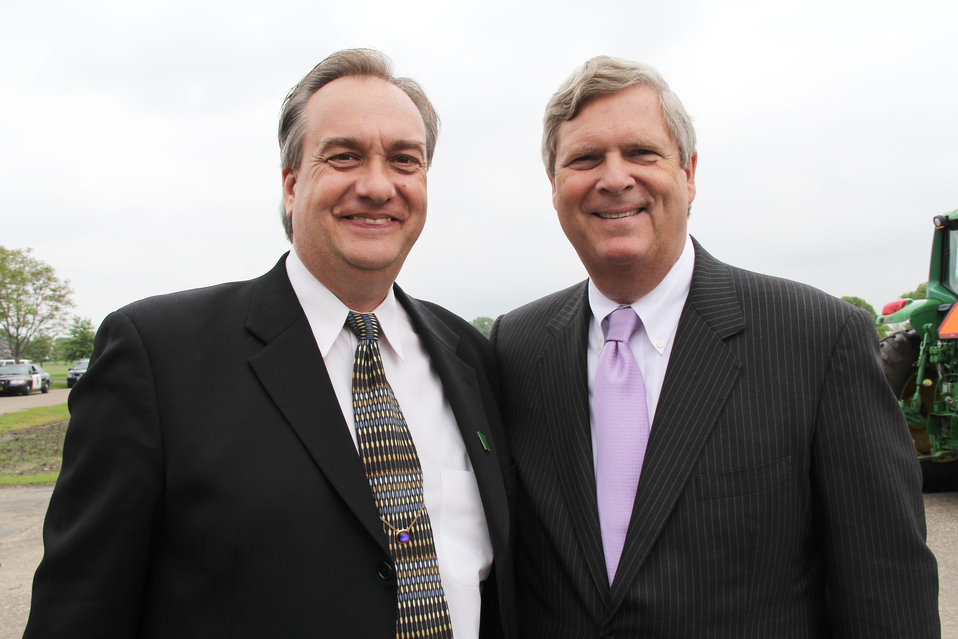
U.S. Congressman Rick Hansen (MN) and Agriculture Tom Vilsack stand together at the conclusion of the event launching the Minnesota Agricultural Water Quality Certification program at St. Paul University, St. Paul, MN on Monday, Jun. 10, 2013. This program is the first of its kind in the nation and is the product of a state-federal Memorandum of Understanding (MOU) signed by Minnesota Governor Dayton, Agriculture Secretary Vilsack and former Environmental Protection Agency (EPA) Administrator Lisa Jackson in January 2012.